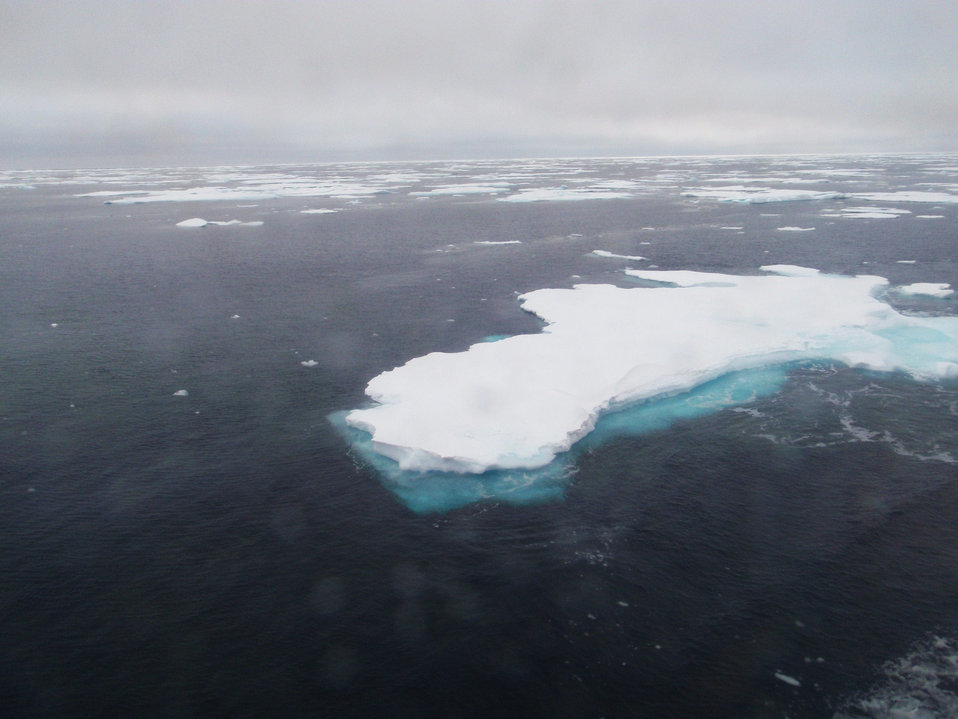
Floes of thick multi-year ice